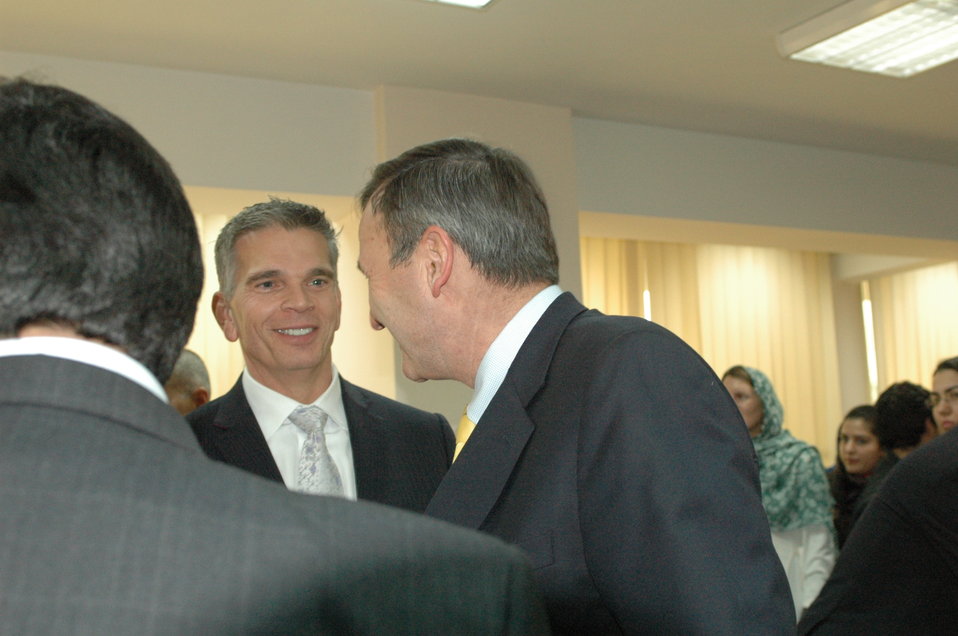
Community Based Stabilization Grants Ceremony, December 7, 2010